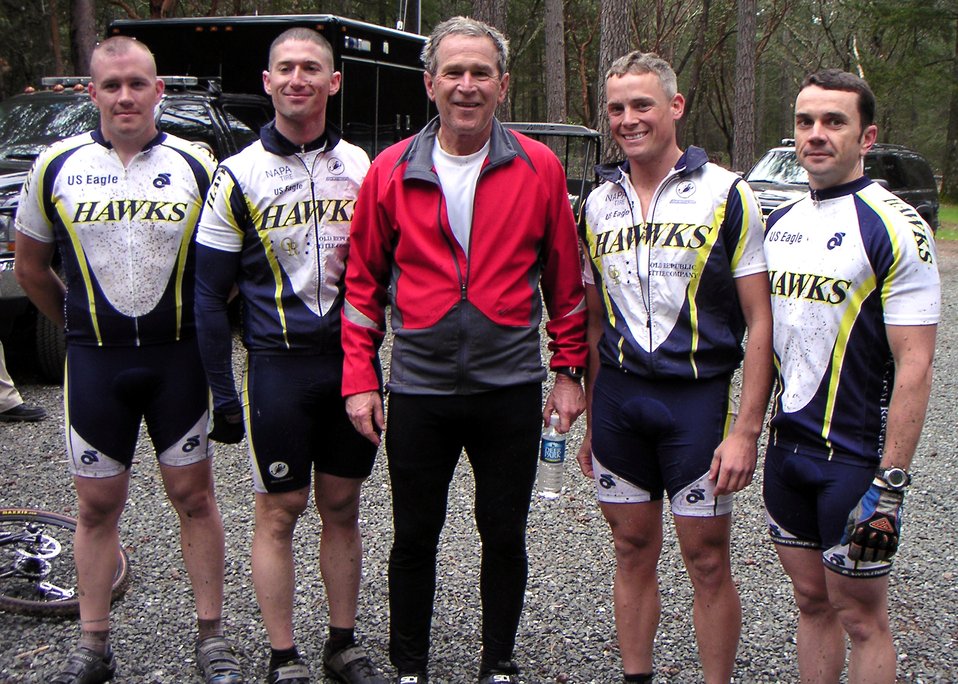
Travis cyclists pedal with president

(Left to right) Staff Sgt. Brian Young, Capt. James Weinstein, President George W. Bush, 1st Lt. Barton Boma and Staff Sgt. Dustin Diede take a break after completing a bike ride through Los Posados Park in Napa County, Calif., on Saturday, April 22, 2006. The president invited the four Airmen -- members of the Hawks Mountain Bike Club at Travis Air Force Base, Calif. -- to ride with him during his visit to Northern California.